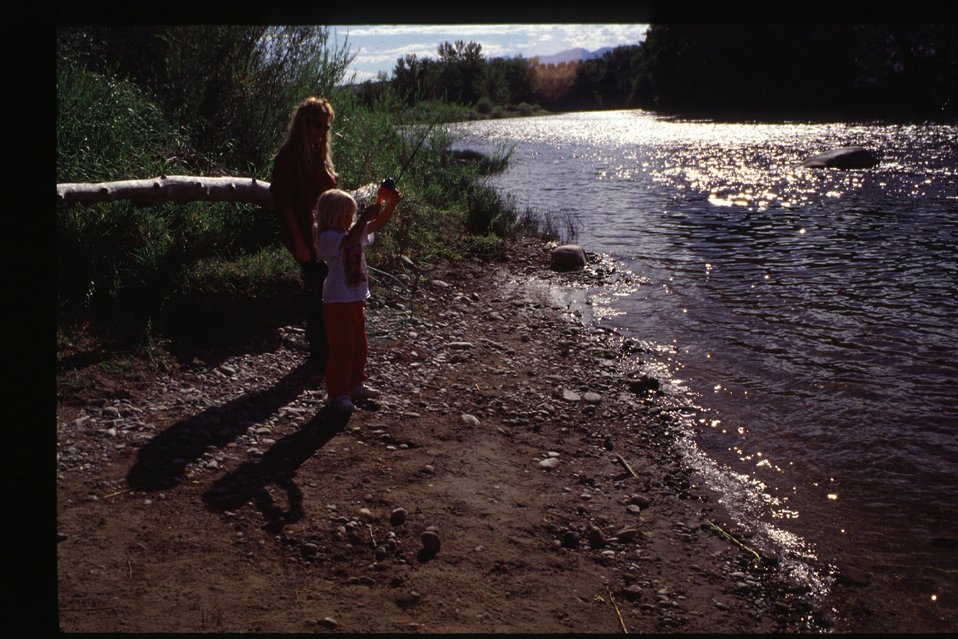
Fishing on river Salmon Field Office UCSC Upper Columbia Salmon Field Office